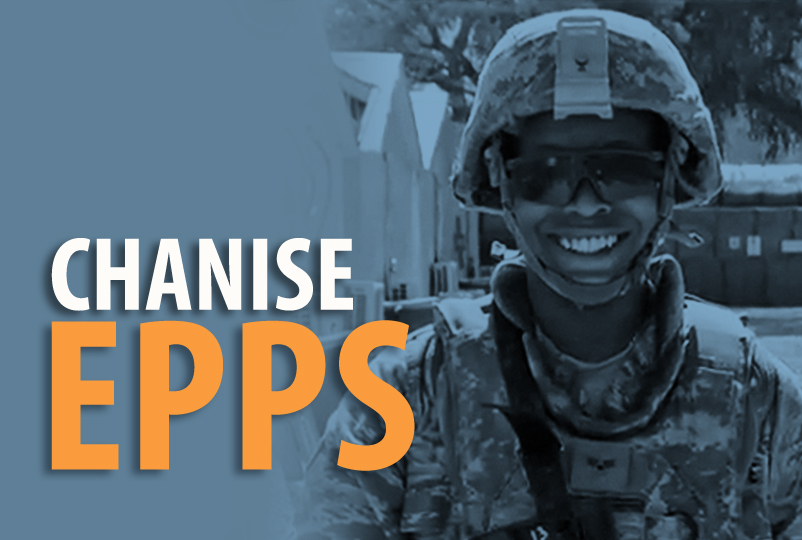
Chanise Epps